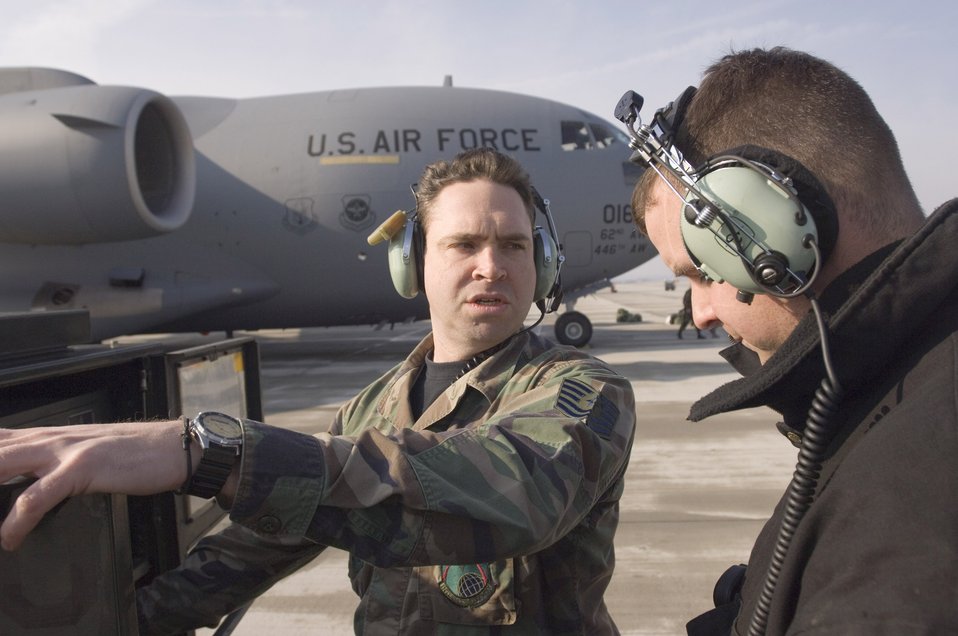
Airlift Gas-n-Go

Tech. Sgt. Kevin O'Dell and Staff Sgt. Griffith Hemphell troubleshoot an aircraft power unit for a C-17 Globemaster III at Spangdahlem Air Base, Germany, Wednesday, March 22, 2006. Sergeant O'Dell is a task expediter and Sergeant Hemphell is an air hydraulics specialist with Spangdahlem's 726th Air Mobility Squadron.